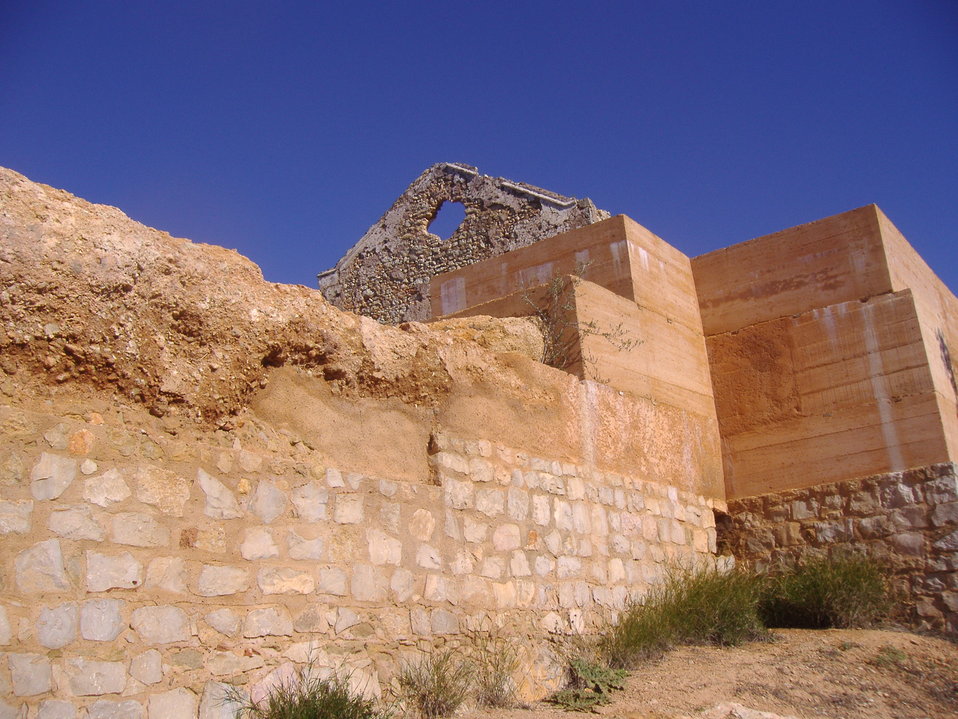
Paderne Castle Portugal 26th November 2007 by Beechgrove - South wall and plinth